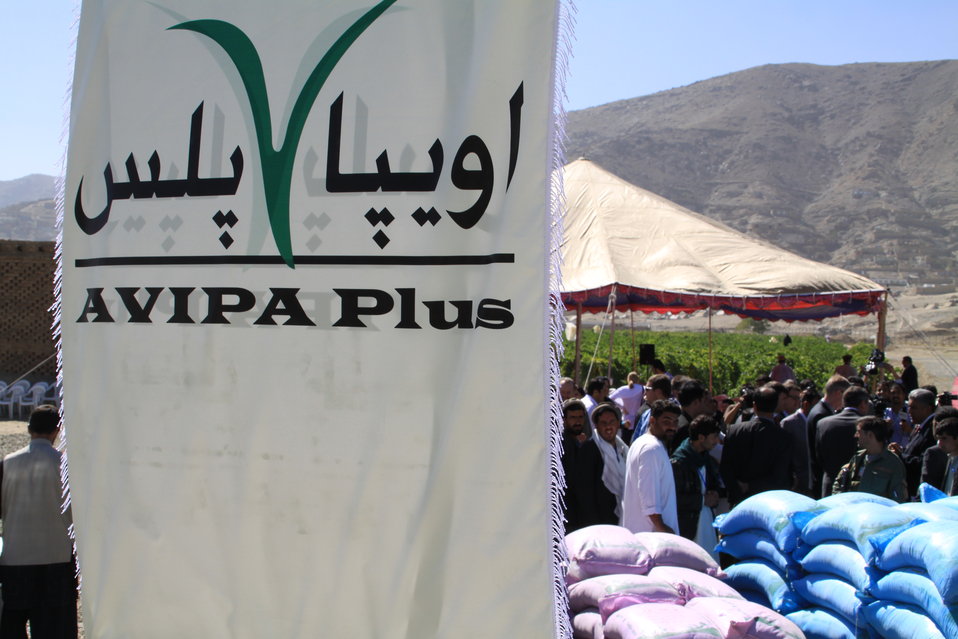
AVIPA Plus Wheat Seed Distribution 101005

US Ambassador Karl Eikenberry and USAID Acting Mission Director Kevin Brownawell joined the Minister of Agriculture, Irrigation and Livestock, H.E. Minister Mohammed Rahimi in signing a Memorandum of Understanding and distributing vouchers to area farmers for wheat and fertilizer.

US Ambassador Karl Eikenberry and USAID Acting Mission Director Kevin Brownawell joined the Minister of Agriculture, Irrigation and Livestock, H.E. Minister Mohammed Rahimi in signing a Memorandum of Understanding and distributing vouchers to area farmers for wheat and fertilizer.

US Ambassador Karl Eikenberry and USAID Acting Mission Director Kevin Brownawell joined the Minister of Agriculture, Irrigation and Livestock, H.E. Minister Mohammed Rahimi in signing a Memorandum of Understanding and distributing vouchers to area farmers for wheat and fertilizer.